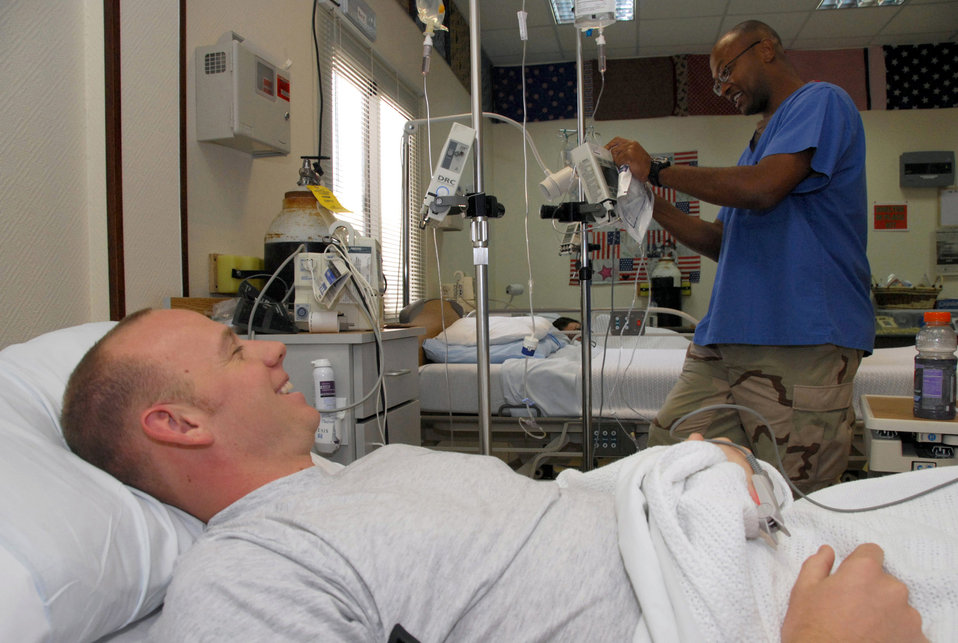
Warriors with mild to moderate injuries staying near the fight

Tech. Sgt. Ryan Thompson is being treated for a stomach disorder at the 379th Expeditionary Medical Group Nov. 12 in Southwest Asia. Warriors with mild to moderate injuries are being sent to the 379th EMG where they can be treated, recover and returned to duty as quickly as possible. Sergeant Thompson is deployed from Fort Dix, N.J.